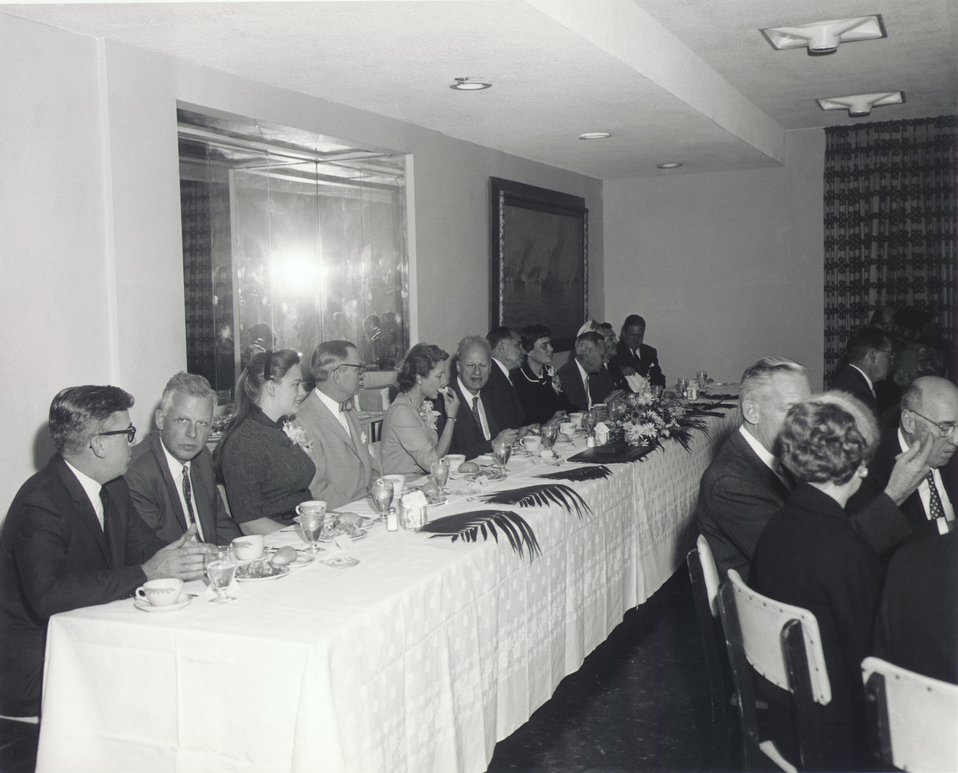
Fermi Award Ceremony & luncheon for Dr. Bethe in Washington on Dec. 1, 1961.